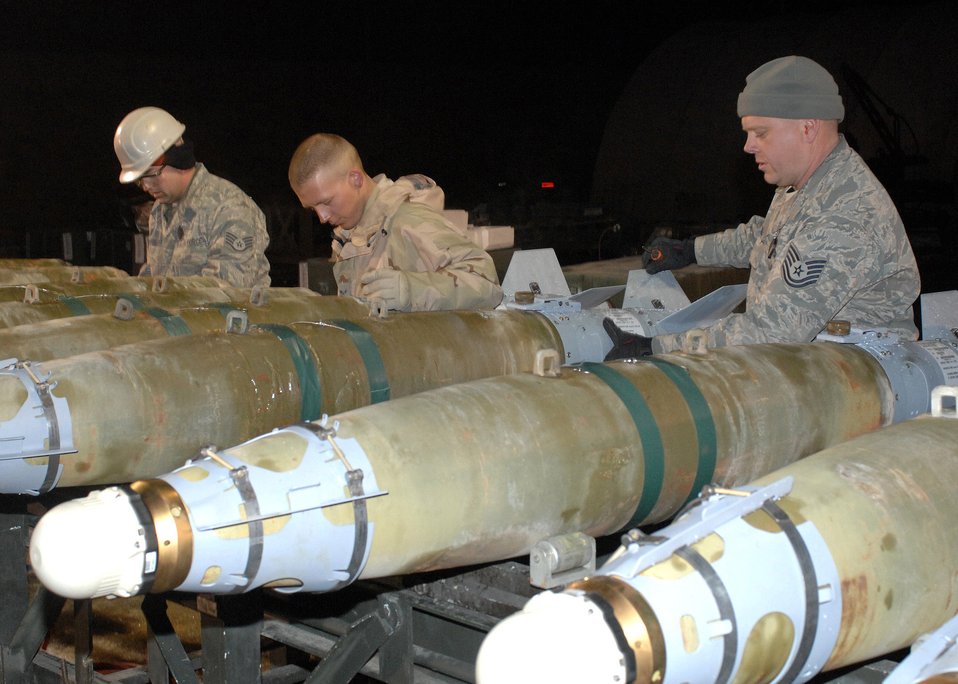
How to build a bomb

Munitions troops with the 455th Expeditionary Maintenance Squadron assemble guided bomb unit-38 bombs during the night shift Feb 14 at Bagram Air Base, Afghanistan. The bombs will be loaded onto F-15 Strike Eagles for missions in support of the war on terrorism. The Airmen are (left to right) Staff Sgt. Jeremy Woodruff, Airman 1st Class Zack Demeter and Tech. Sgt. Ben Walker. Sergeant Woodruff is from the 375th Logistic Readiness Squadron, Scott Air Force Base, Ill., Airman Demeter is from the 52nd Equipment Maintenance Squadron, Spangdahlem Air Base, Germany, and Sergeant Walker is form the 4th Equipment Maintenance Squadron, Seymour Johnson Air Force Base, N.C.